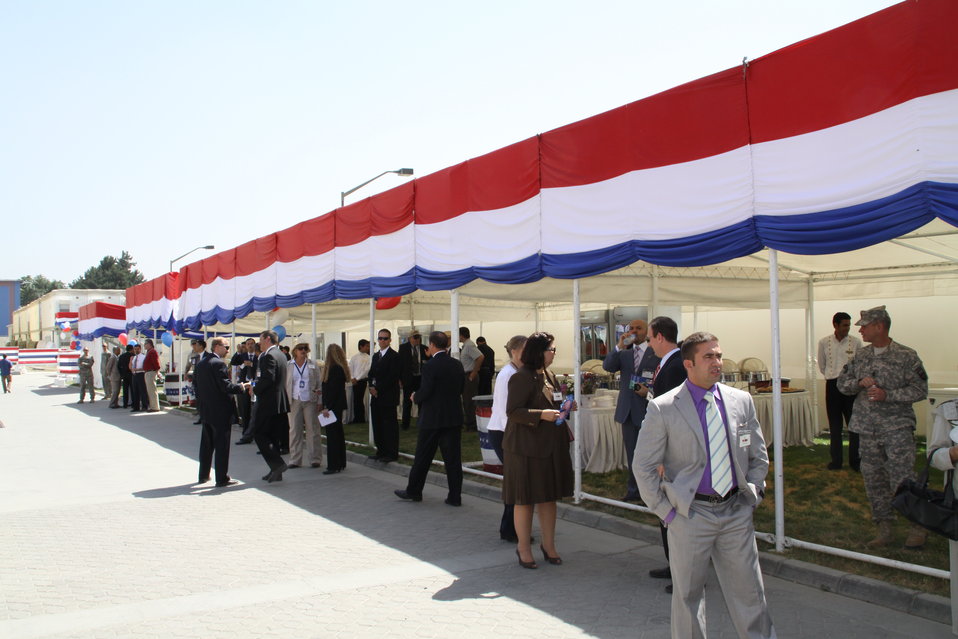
Kabul Official July 4th Celebration